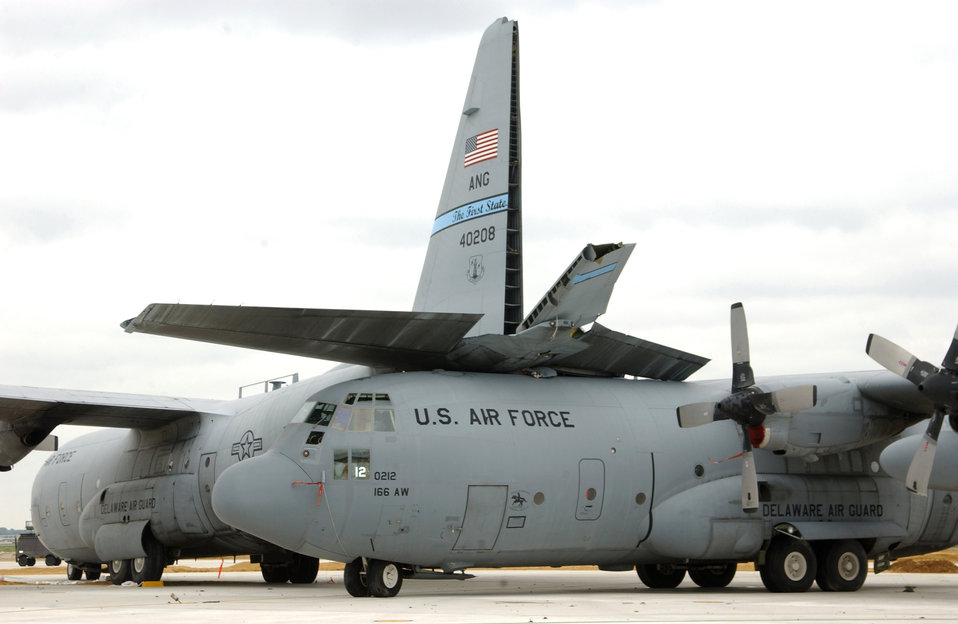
Fierce tornado

NEW CASTLE, Del. - A C-130 Hercules was pushed underneath another aircraft due to a tornado that touched down here Sept. 28. The aircraft are assigned to the Delaware Air National Guard's 166th Airlift Wing.